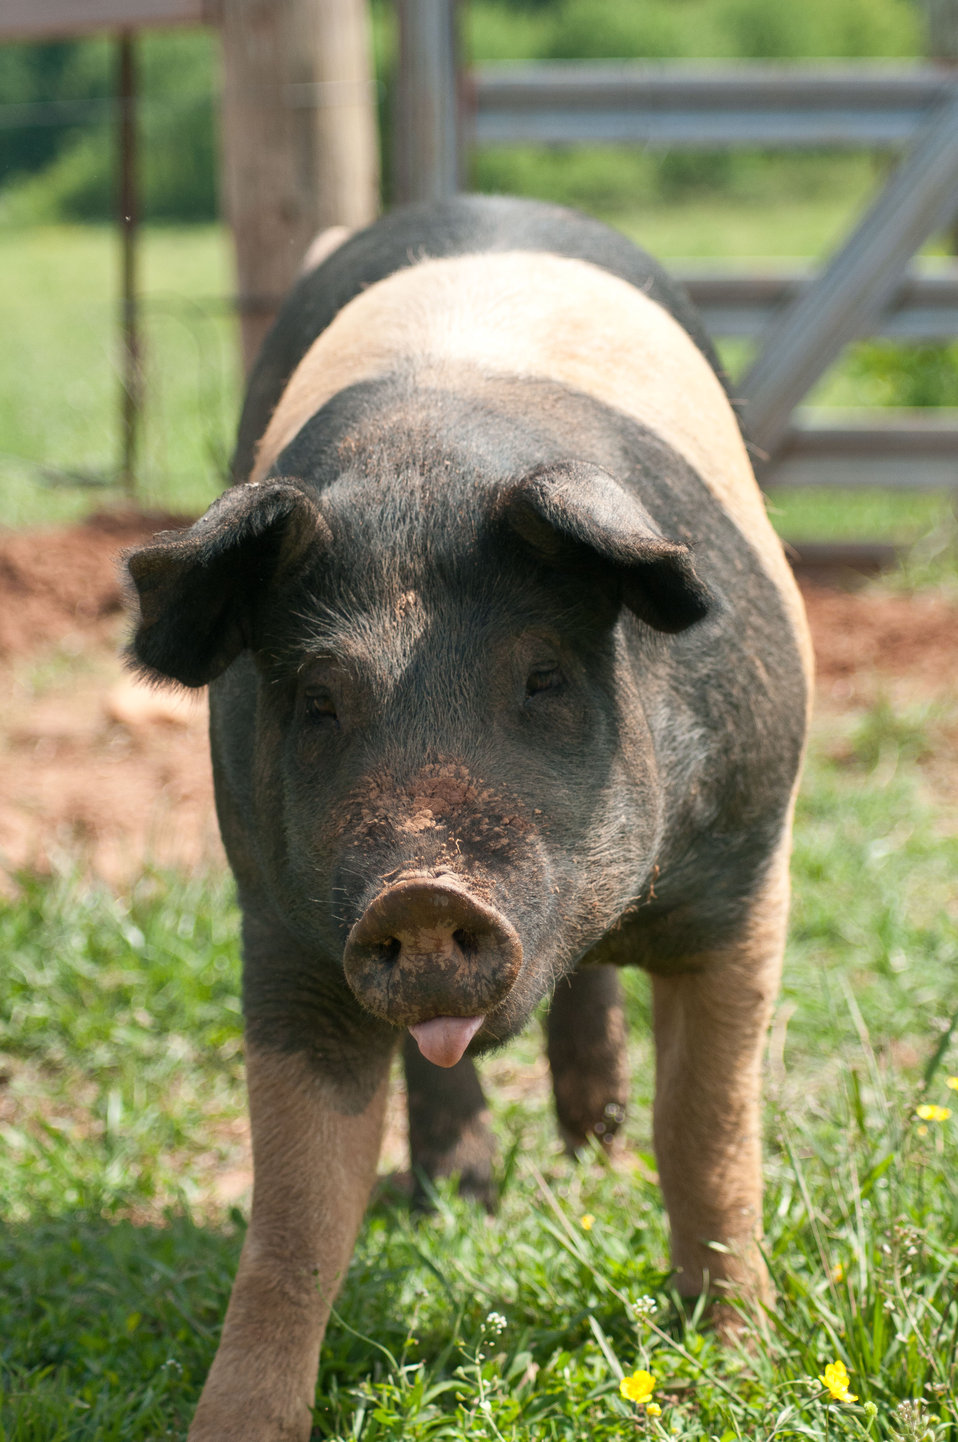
Pigs at Keenbell Farm are pasture raised by 3rd generation farmer CJ Isbell in Rockville, VA, on Friday, May 6, 2011. The farm was established in 1951, and produces grass-fed beef, pastured pork, and free-range eggs beyond organic standards. Keenbell Farms pork products range from sausage, to bacon, pork chops, roasts, bratwurst, and many more. A majority of their diet is grass and roots. They are offered corn, soybean, minerals, and a hay mixture that was developed by the farm. Raising the pigs on pastures reduces odor problems, and avoids hazardous waste issues by distributing the manure. Pastures are rotated at least, every 90 days to allow the grass and land to re-grow. Keenbell and other farms produce meat products for Fall Line Farms food hub that offer a wide variety of household food staples and specialty items. Members can pick their customized orders from an ever changing inventory of fruits, vegetables, meats, soaps, eggs, cheeses, flowers, honey, pastas, sauces, syrups, baked goods, mushrooms, flour and grains. Suppliers post what they have to sell on Lulus Local Food online listing where customers can make their selection. Every Thursday, suppliers team up to deliver customized orders to, one of several pick-up points, designated by the customer in or around the Richmond, VA area.